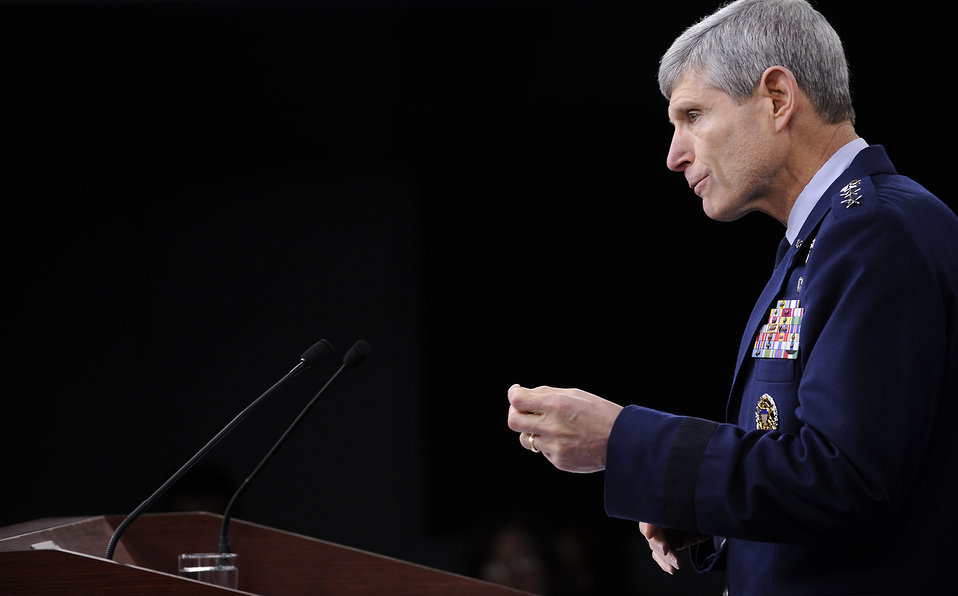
CSAF talks AF budget, strategy

Air Force Chief of Staff Gen. Norton Schwartz delivers comments about the new defense strategy to members of the media in the Pentagon on Jan. 27, 2012. Throughout the ongoing budget process, Schwartz said, the Air Force will remain committed to its ongoing responsibilities to provide globally-postured, regionally-tailorable, full-spectrum airpower.